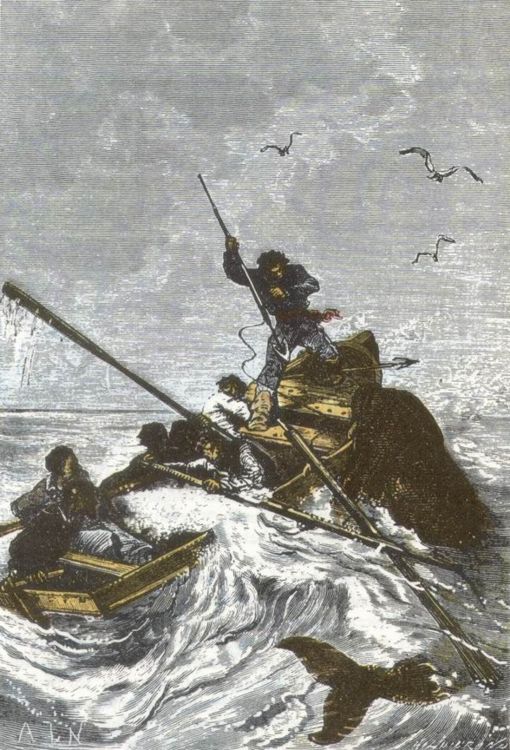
An illustration from Jules Verne's novel 'Twenty Thousand Leagues Under the Sea' (1866-69) drawn by George Roux. Polski: Ilustracja powieści Juliusza Verne'a 'Dwadzieścia tysięcy mil podmorskiej żeglugi' (tytuł przekładany także jako: 'Dwadzieścia tysięcy mil podmorskiej żeglugi około świata', '20.000 mil podmorskiej żeglugi'; 1866-69, I wyd. 1870) autorstwa Alphonse'a de Neuville lub Édouarda Riou. Français : Jules Verne 'Vingt mille lieues sous les mers' (1866-69), dessins par Alphonse de Neuville ou Édouard Riou. Orginal description taken from the book: Français : Le gigantesque animal soulevait l’embarcation.